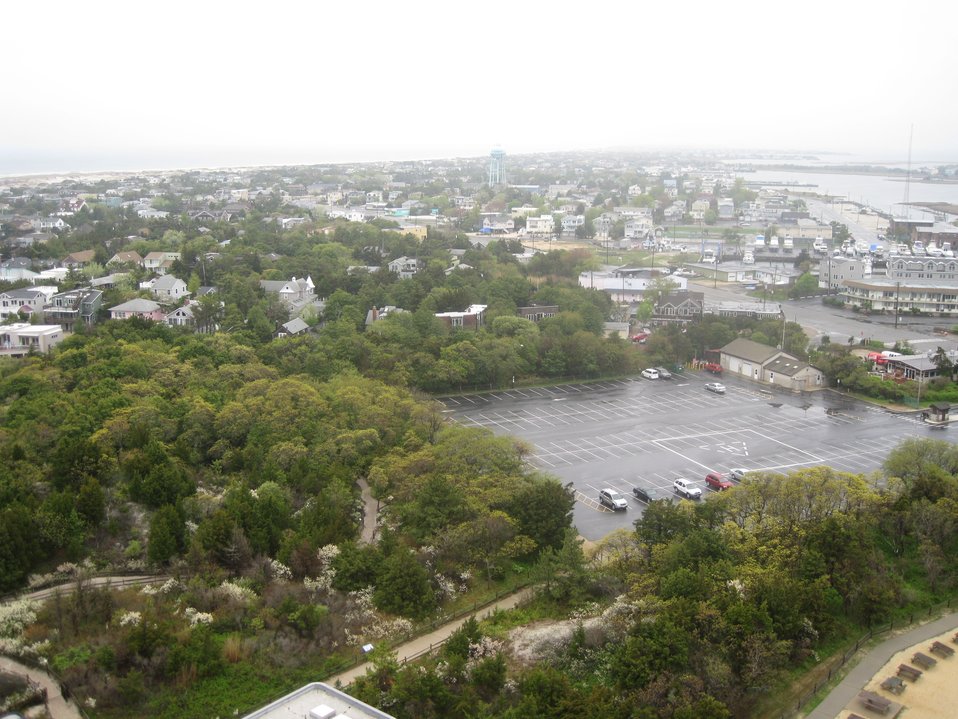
View to the south down the New Jersey shore from Barnegat Lighthouse